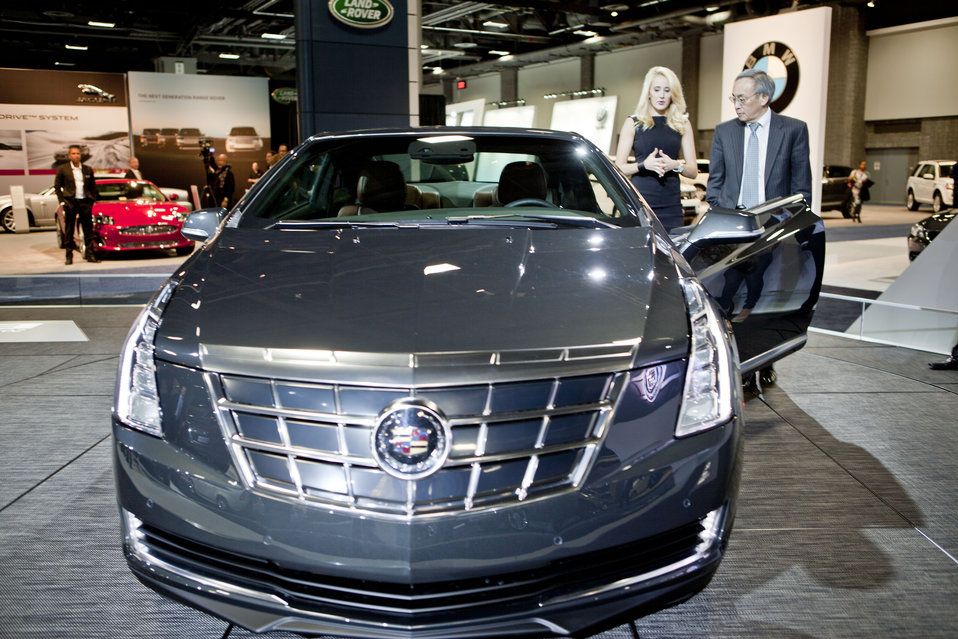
Energy Secretary Steven Chu discusses the features of the 2014 Cadillac ELR -- the luxury car built built on the same powertrain platform as the Chevy Volt.